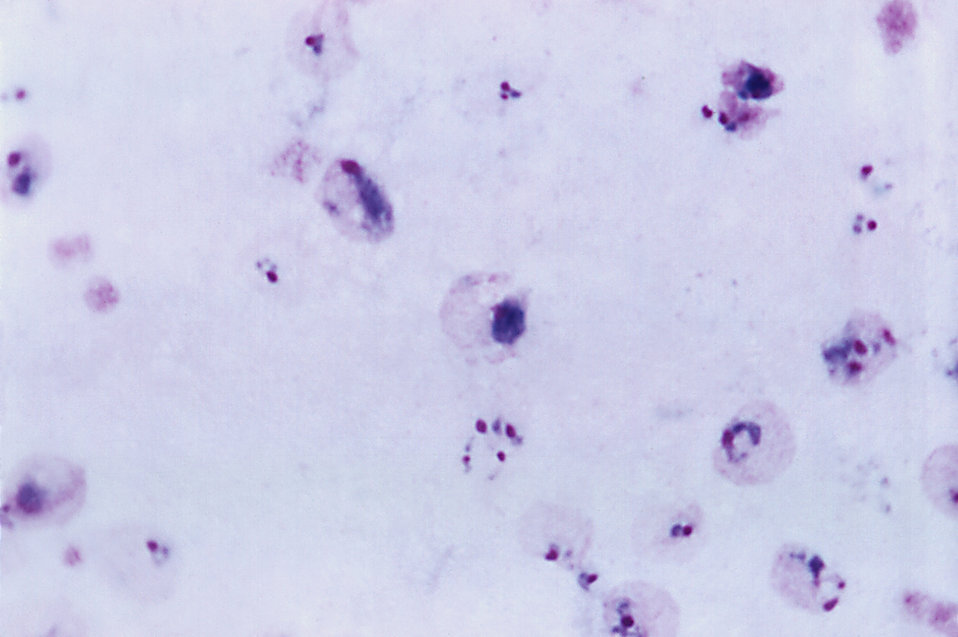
This thick film micrograph depicts a mature Plasmodium vivax trophozoite, using Giemsa stain; Mag. 1125X.